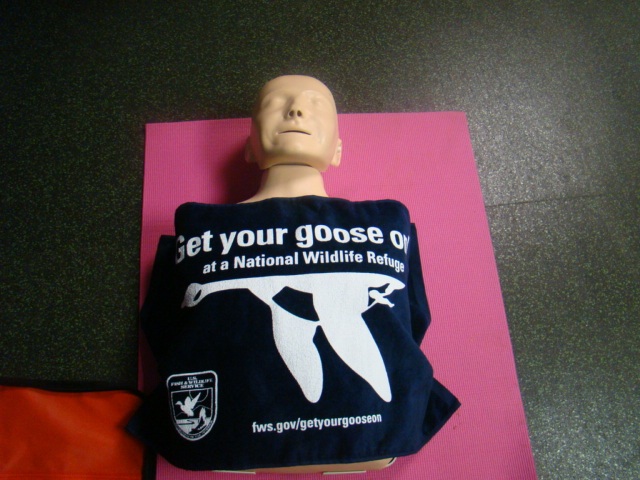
Get Your Goose On!

CPR training at John Heinz NWR.